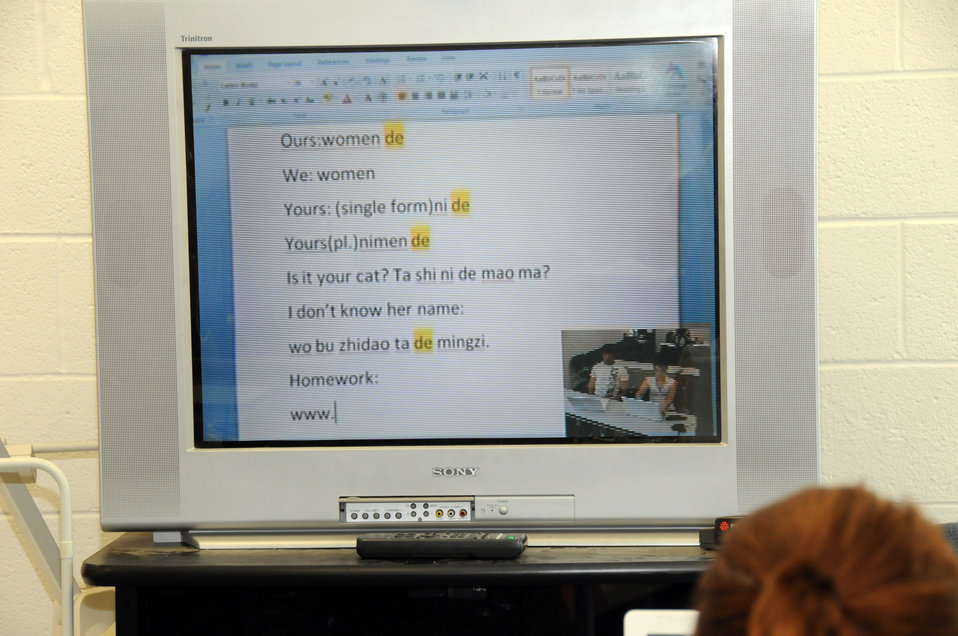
The students at Crescent High School in Crescent, Oklahoma are taking online courses in foreign languages, such as Chinese on August 9, 2009. The school received funding through the U. S. Department of Agriculture (USDA) Rural Development (RD) Distance Learning and Telemedicine Program (DLT) allocated through the American Recovery and Reinvestment Act of 2009 (ARRA).